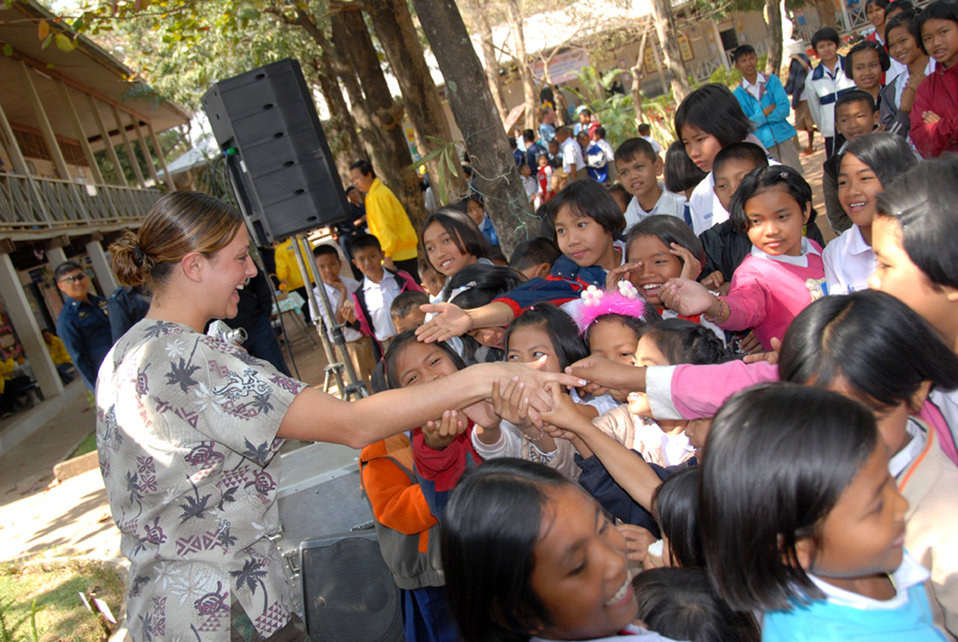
Cope Tiger participants provide humanitarian assistance

Senior Airman Elizabeth Auster shakes hands with Thai children from the Ban Chaimongkon school Jan. 30 in Korat, Thailand. Military members from the United States, Thailand and Republic of Singapore took part in a humanitarian mission at the school as part of Exercise Cope Tiger 2007. Airman Auster is from 15th Aeromedical Dental Squadron at Hickam Air Force Base, Hawaii.